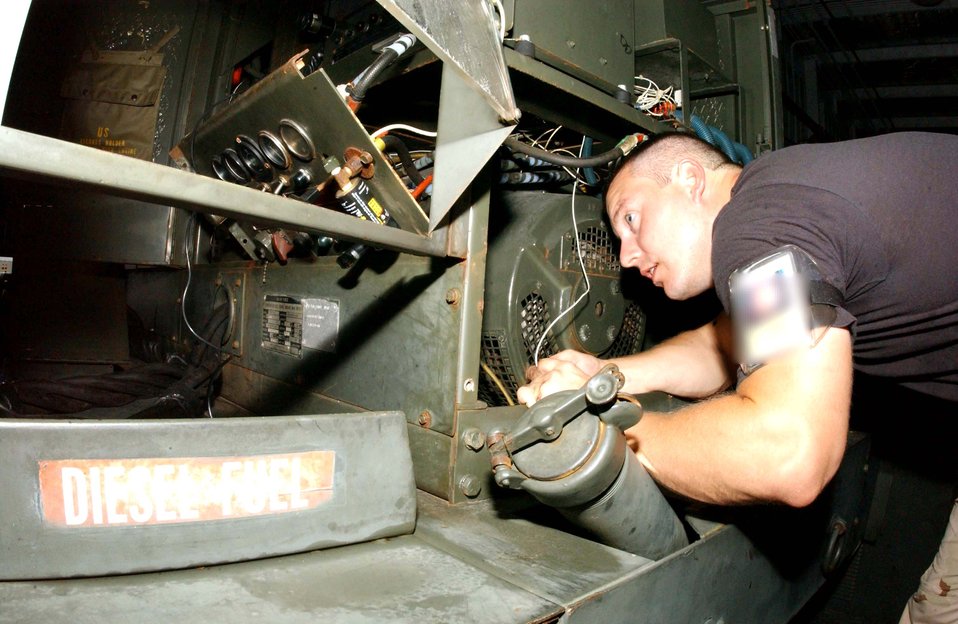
Airmen keep ground equipment working, mission flying

OPERATION ENDURING FREEDOM -- Staff Sgt. Michael Snow troubleshoots a fuel gauge malfunction on a Hobart-86 at a forward-deployed location. He is an aerospace ground equipment mechanic with the 28th Expeditionary Air Refueling Squadron deployed from MacDill Air Force Base, Fla.